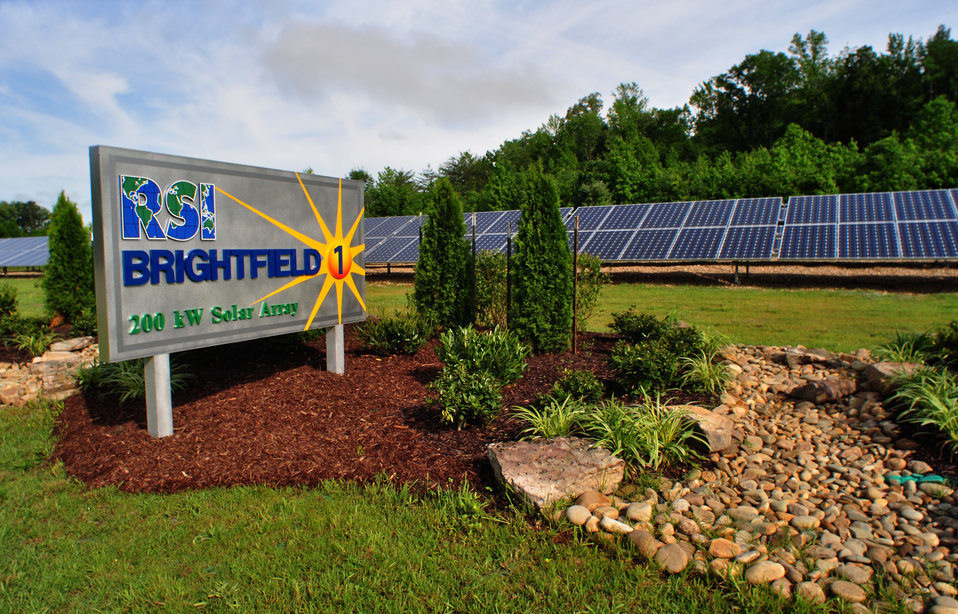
RSI Brightfield 1 solar array at East Tennessee Technology Park

12-086-219 DOE photo by Lynn Freeny

Oak Ridge Tennessee 5/15/2012